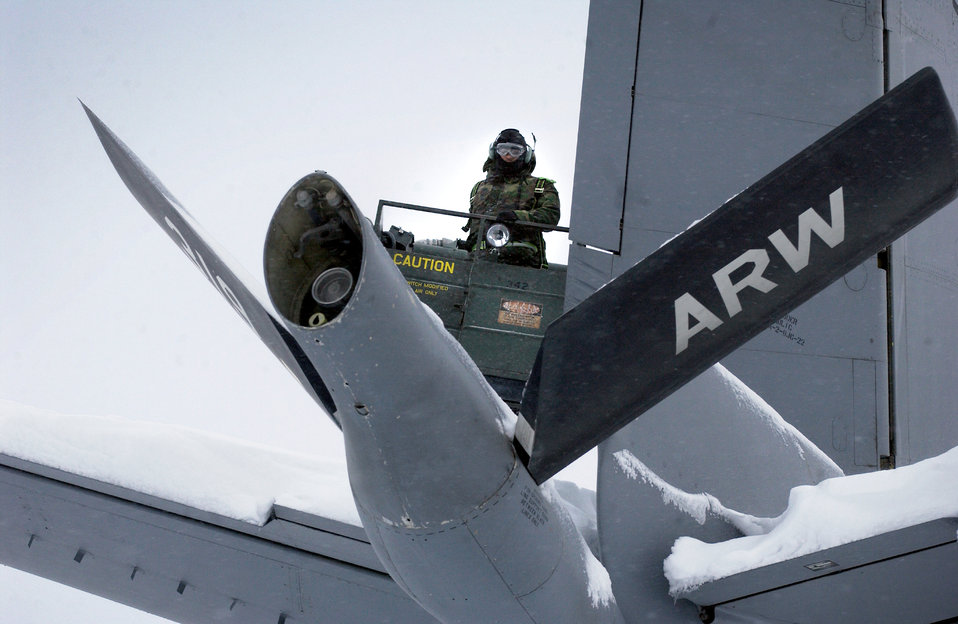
The de-ice man cometh

GRAND FORKS AIR FORCE BASE, N.D. -- A maintainer from the 319th Aircraft Maintenance Squadron prepares to de-ice a KC-135 Stratotanker during the onset of a snowstorm. Temperatures average about 7 degrees during the wintertime but eventually rise to an average of 70 in the summer.